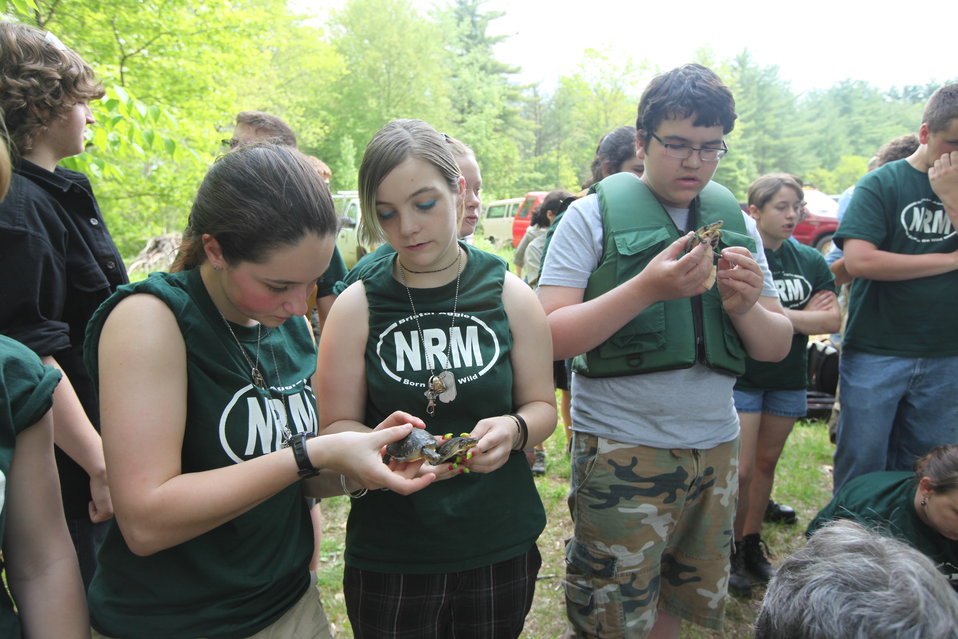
Blanding's turtle release May 2011

Bristol County Agricultural School sophomores partnered with species experts to raise Blanding's turtles and released them in late spring into wetland habitat.